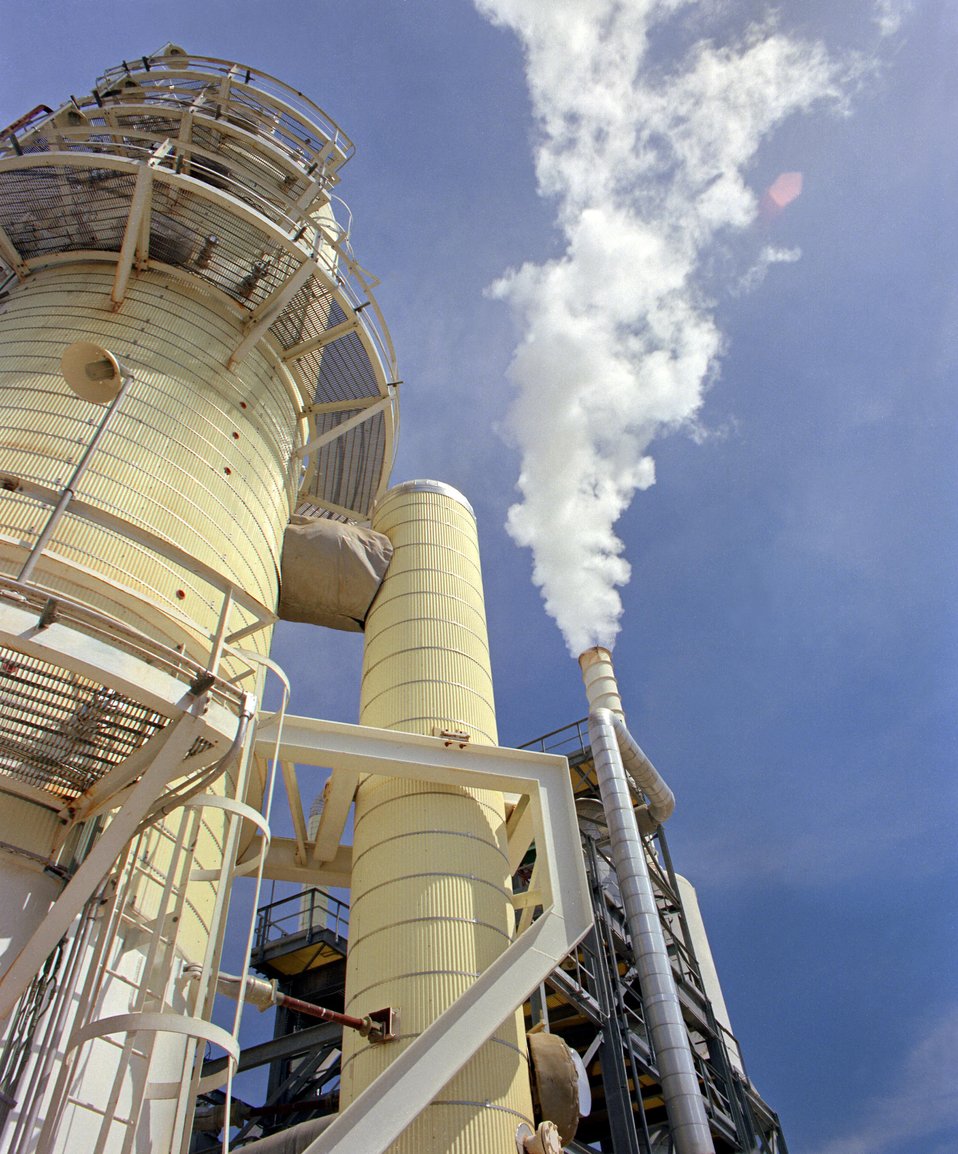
THE LEATHERS GEOTHERMAL POWER PLANT IN IMPERIAL COUNTY, CALIFORNIA.

THE LEATHERS GEOTHERMAL POWER PLANT IS LOCATED IN THE SALTON SEA GEOTHERMAL RESOURCE AREA NEAR SAN DIEGO, CALIFORNIA. IT IS PART OF THE IMPERIAL VALLEY PARTNERSHIP PROJECT, UNDER CONTRACT TO SELL POWER TO SOUTHERN CALIFORNIA EDISON CO.